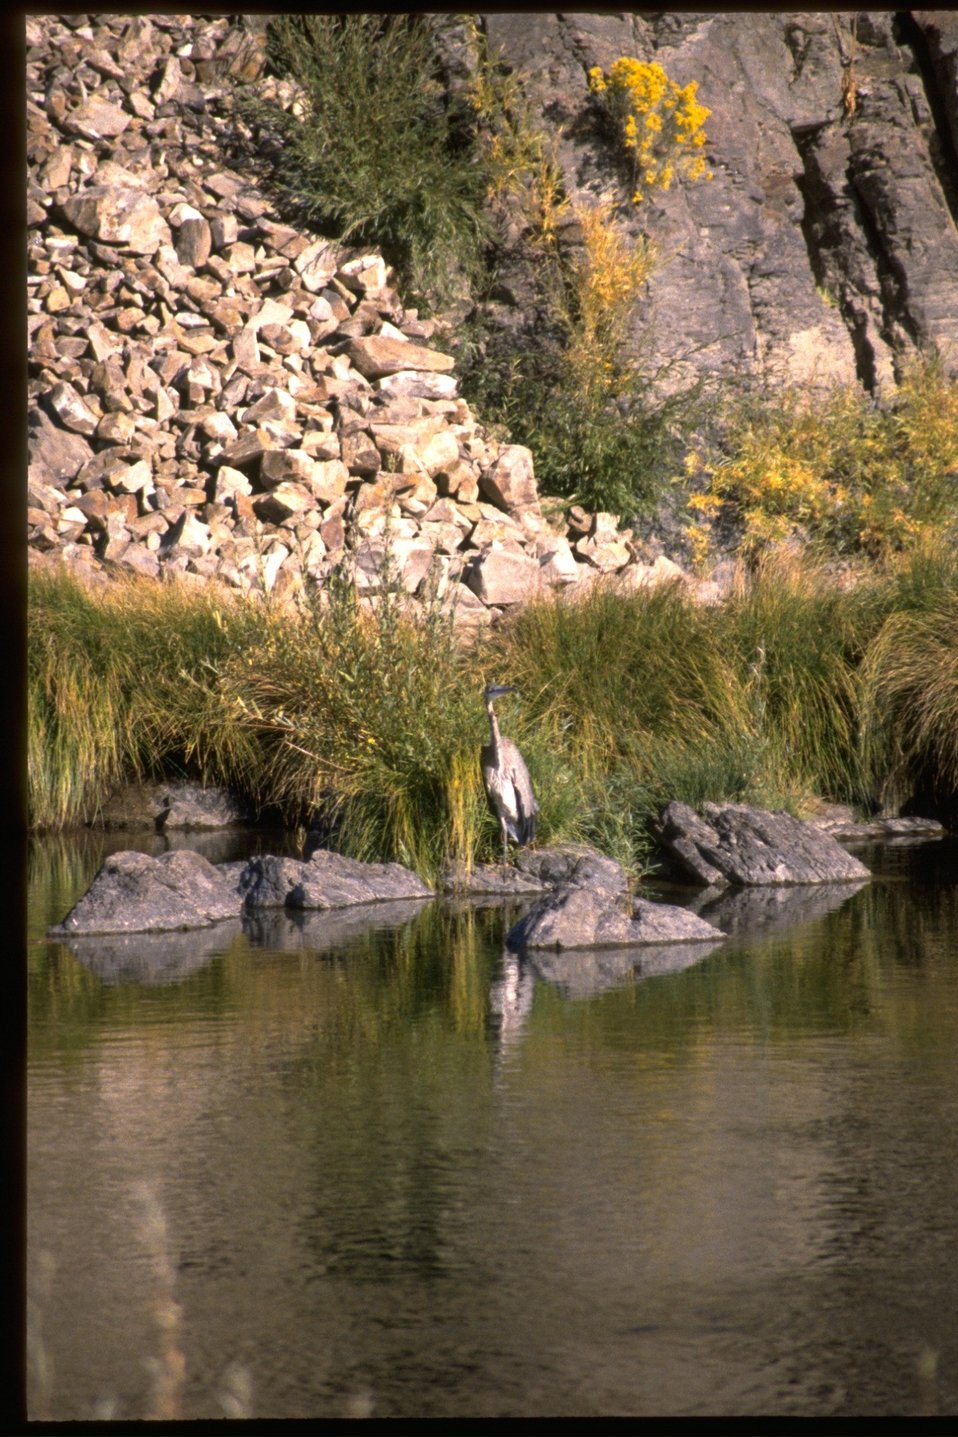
Heron on rock in John Day River with vegetation in the background.